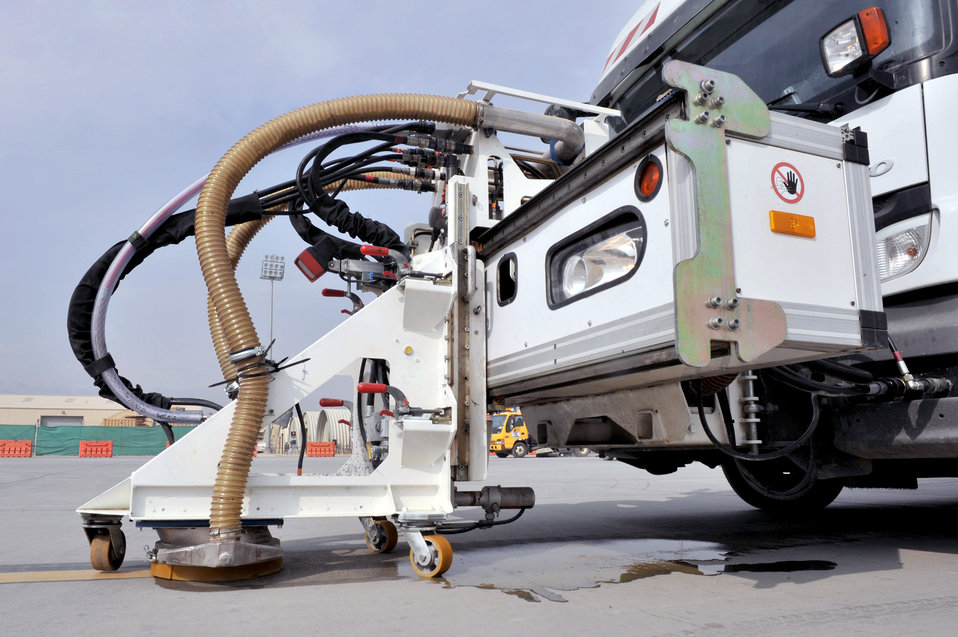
Rubber and Paint Removal

A TrackJet TJ-24 surface-treatment system is used by contractors from EMTA Electric Engineering Construction Contracting and Trade Inc. to strip paint from the runway Feb. 1, 2011, at Bagram Airfield, Afghanistan. EMTA, a company headquartered in Turkey, has been contracted to remove excess rubber from runways and repaint more than 40 aircraft parking spaces here.